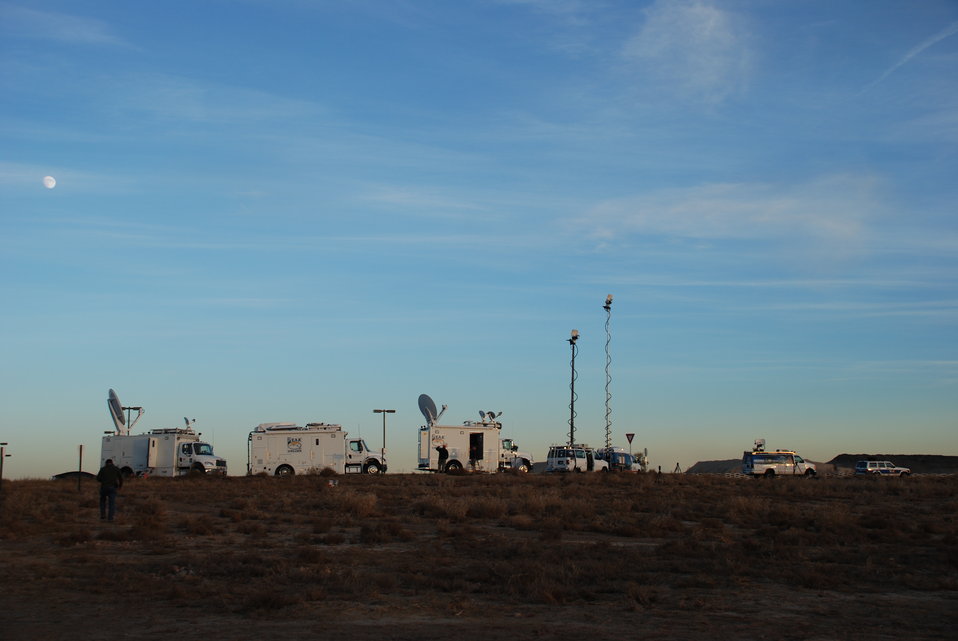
Ivory Crush 2013